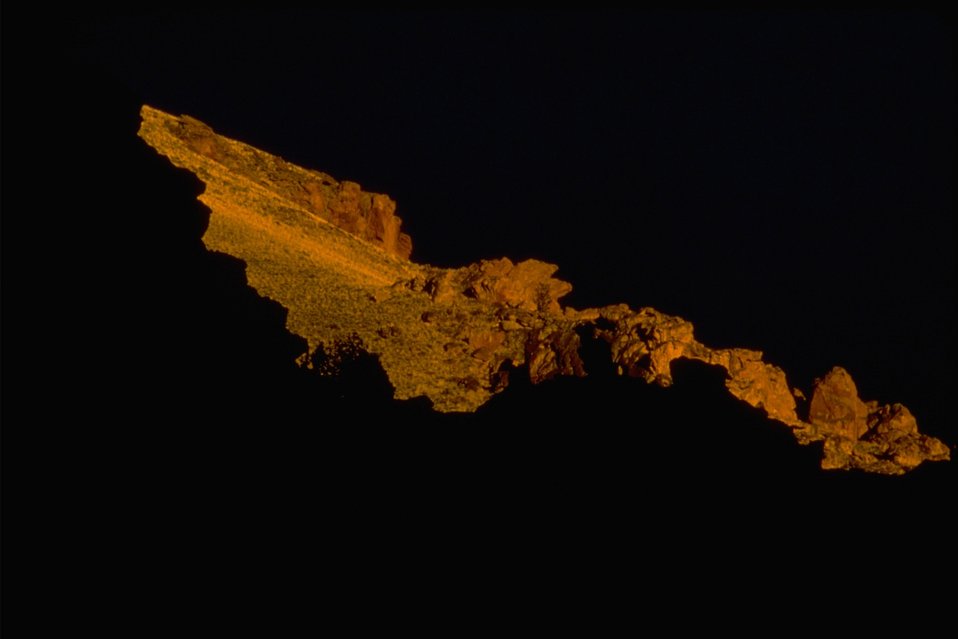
Undetermined.